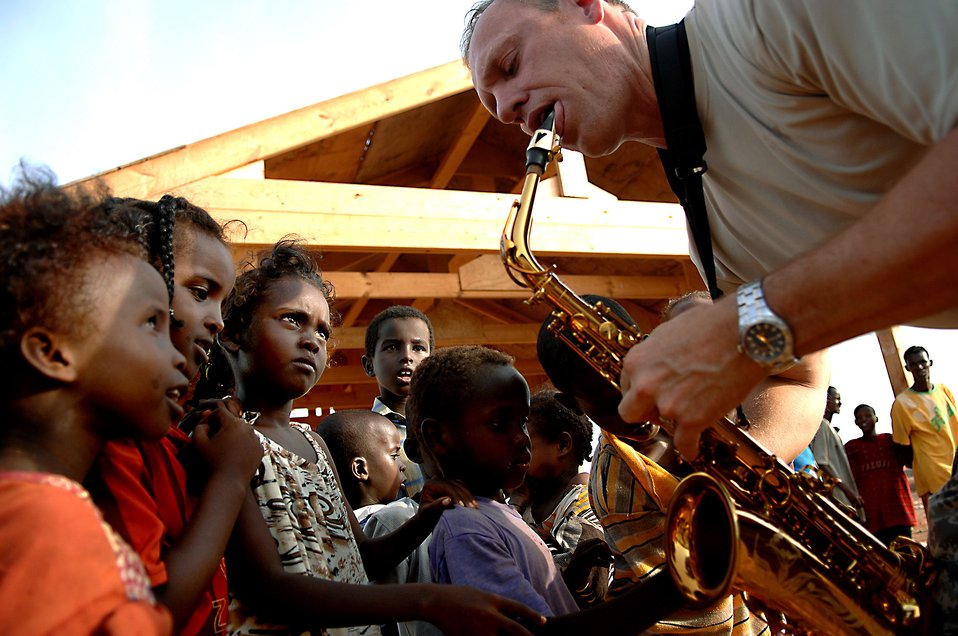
U.S. Air Force Band Concert, Djibouti

Master Sgt. Daniel Weber performs for villagers May 22 in Negad, Djibouti. The band is deployed to support Combined Joint Task Force - Horn of Africa out of Camp Lemonier, Djibouti. Sergeant Weber is a saxophonist and vocalist with the U.S. Air Force Central Command band, Falcon.